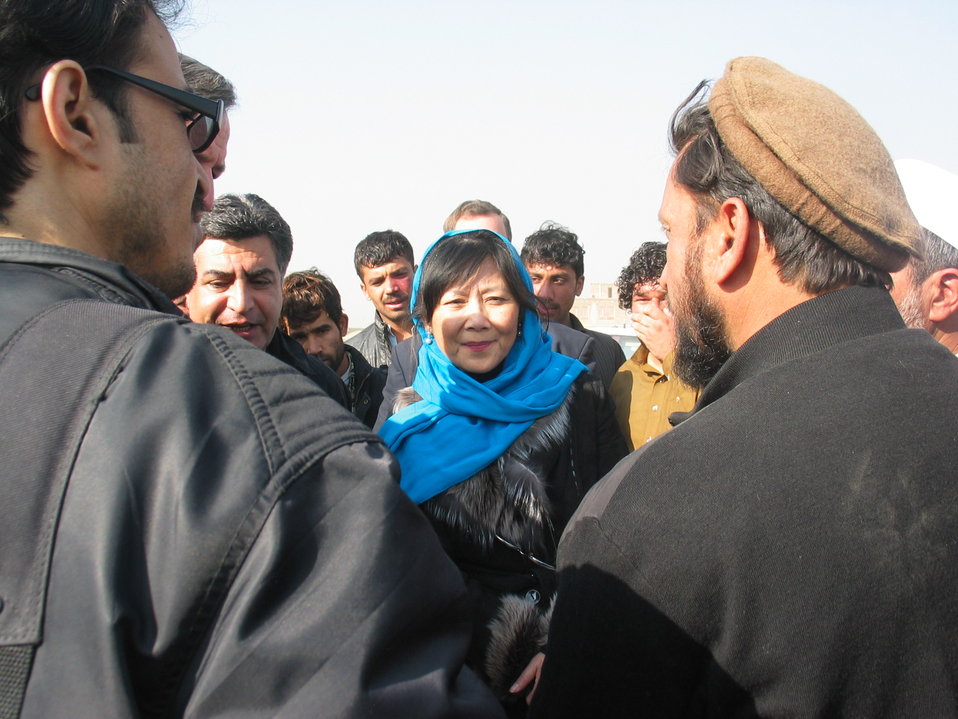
Kabul River Bridge Renovation, December 3, 2010